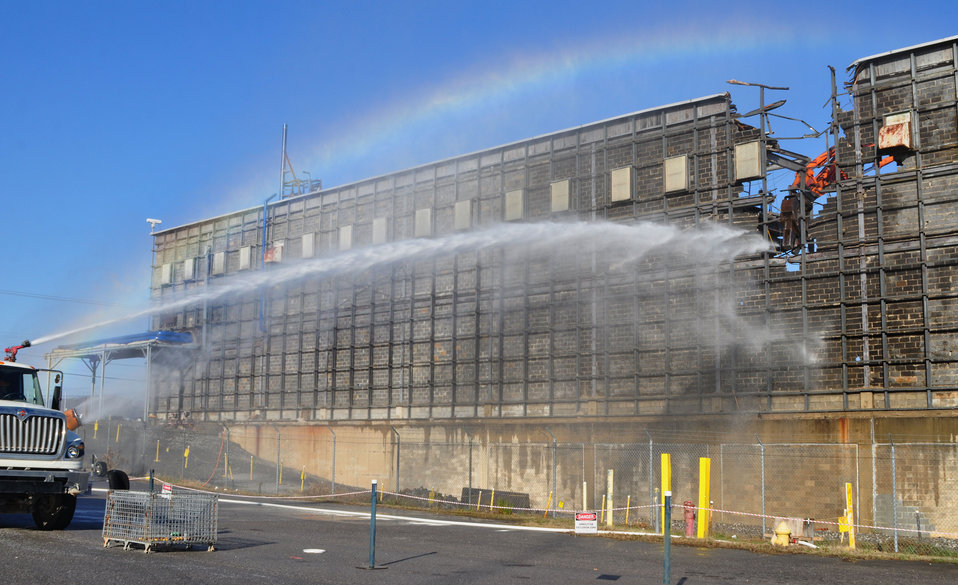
K-25 Demo Oak Ridge 2013

13-152-161 DOE photo Lynn Freeny 12-12-2013 Oak Ridge Tennessee